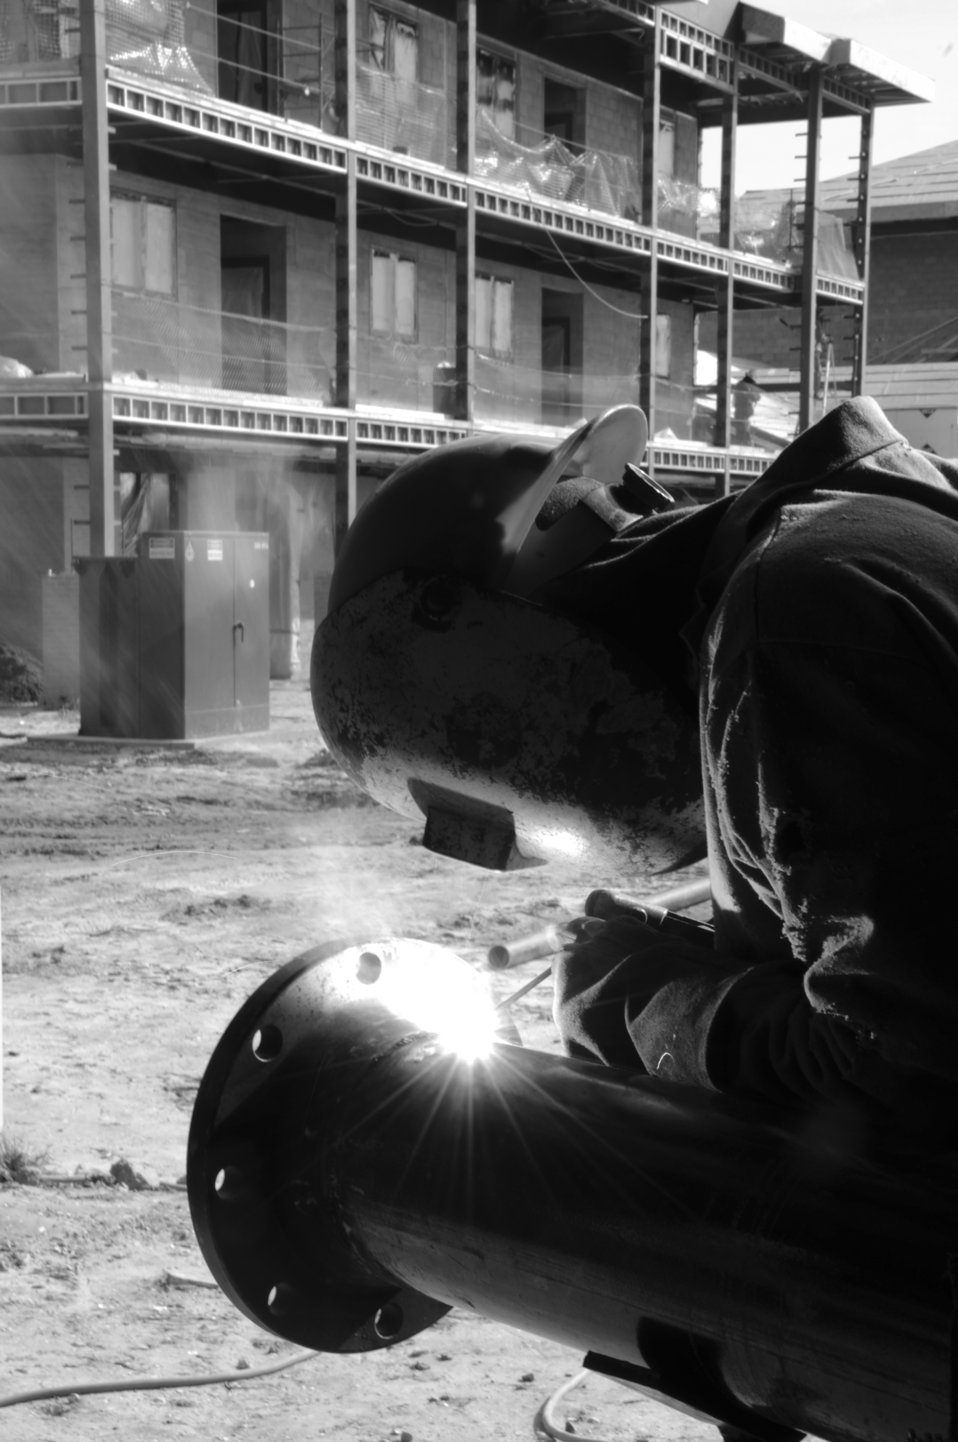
It takes only a spark

Chris Brantley from MCC Mechanical welds a water line pipe for the new dorm under construction at Keesler Air Force Base, Miss., Jan. 13, 2011. The $14.9 million structure is the first new dormitory to be built for the base in 50 years, and will consist of four three-story wings to house 144 people.